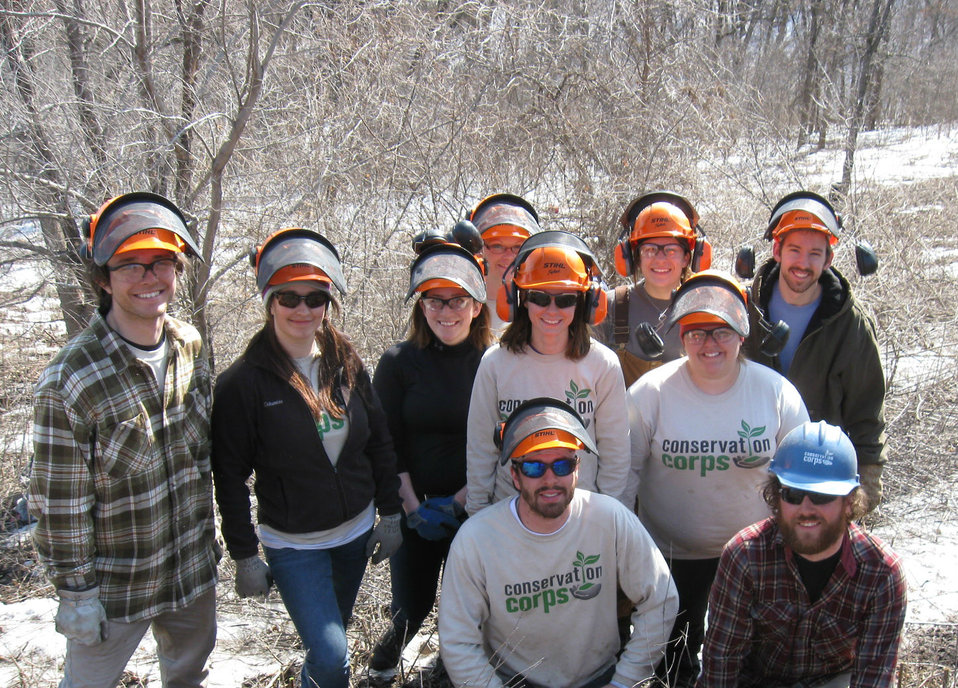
The Team

Two Conservation Corps crews started work in late March 2013.